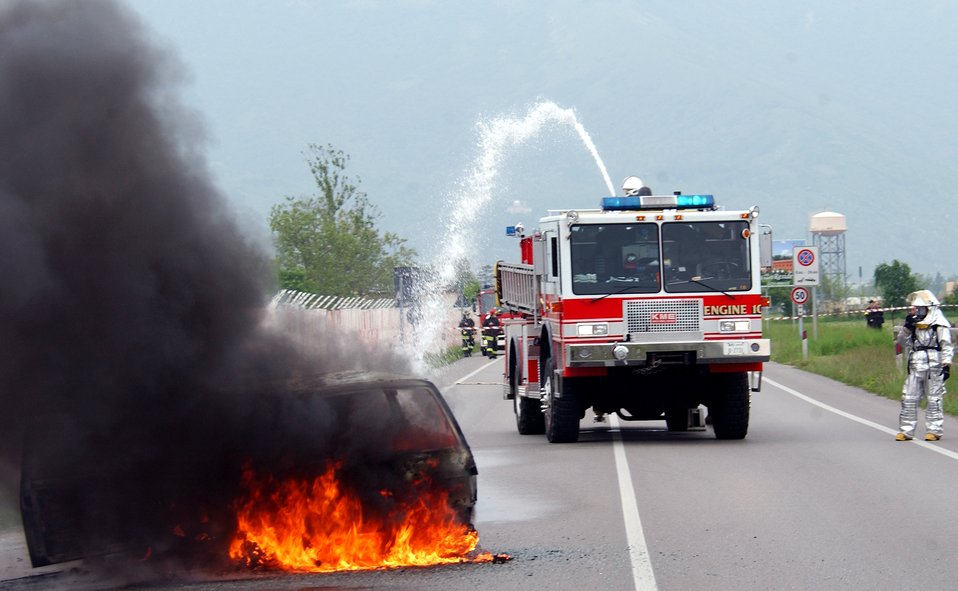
Joint training develops seamless response

Firefighters from the 31st Fighter Wing at Aviano Air Base, Italy, douse a fire during an American-Italian exercise on Thursday, May 4, 2006. Responders from various Italian fire and police departments and medical facilities joined those from the 31st FW fire department, hospital and security forces for a mass accident exercise. The purpose of the exercise is to develop a seamless response capability between Italian and American emergency professionals.